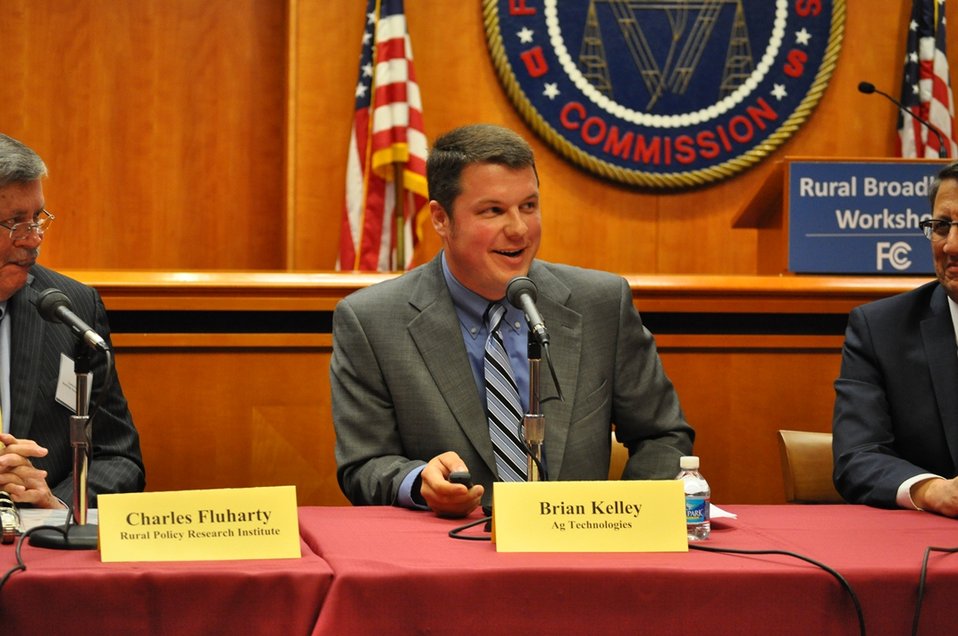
Rural Broadband Workshop: March 19, 2014

Panel 1: Broadband Needs, Challenges and Opportunities in Rural America